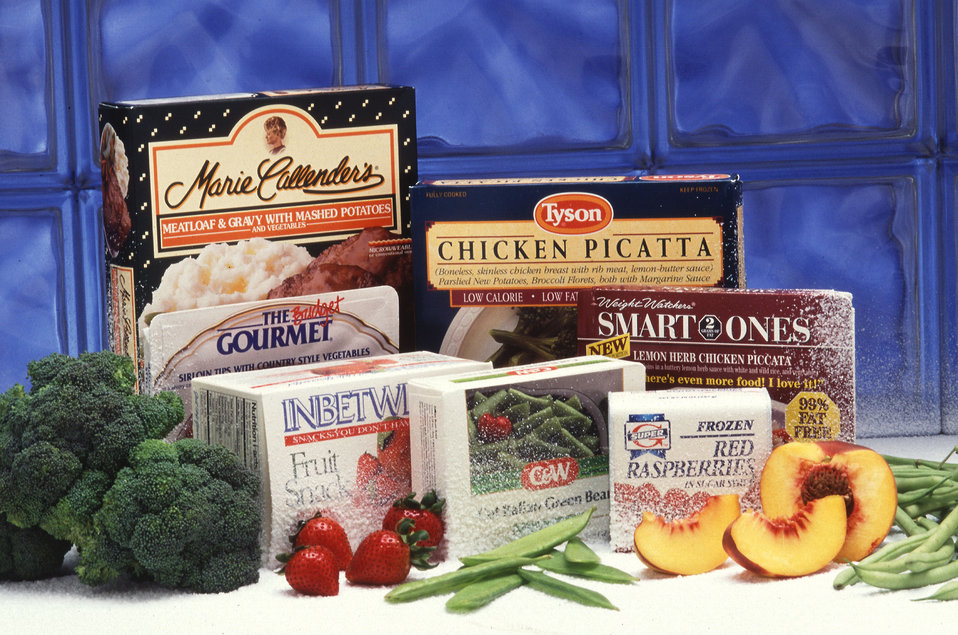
In the early years of frozen food, a whole host of complaints poured in about things like cardboard texture, funny color, and no taste. Some people also worried about lost nutrients and bacterial contamination during processing and storage. The U.S. Department of Agriculture’s (USDA) Agricultural Research Service (ARS) scientists began the Time-Temperature Tolerance Project. Scientists built their own freezing facilities inside the lab and experimented with every step in the process, from the selection of the variety grown, harvesting methods, handling, blanching, freezing, packaging, storing, and transporting products to market. The knowledge these scientists discovered helped to ensure the survival and growth of the U.S. frozen food industry. In time, they devised nine principles for freezing vegetables. Producers still follow these cardinal rules today.